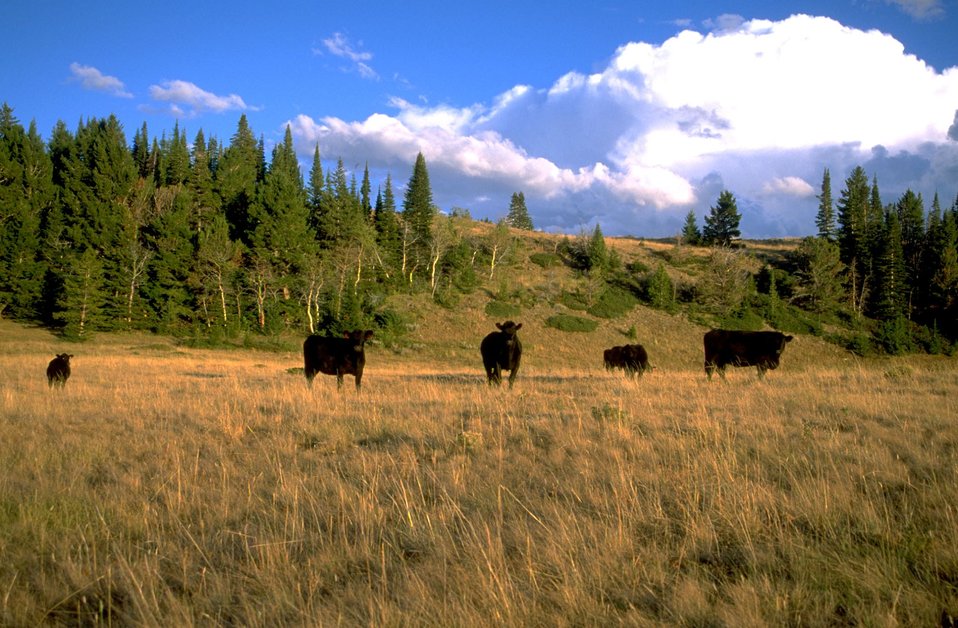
Cattle grazing